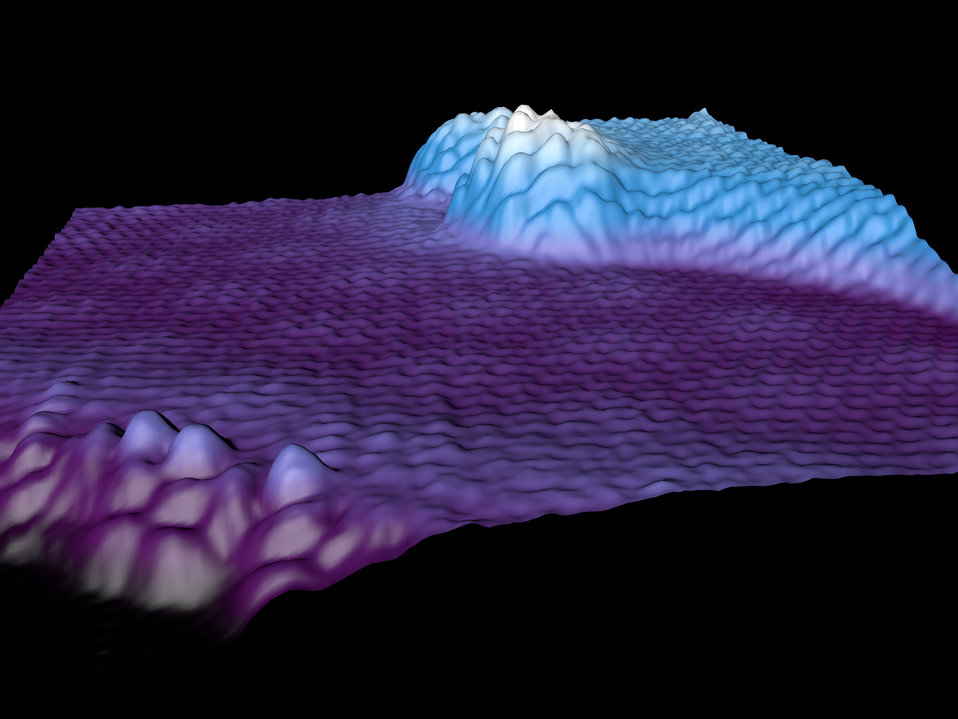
AT ARGONNE NATIONAL LABORATORY, 3D RENDERING OF GRAPHENE SHOWING CONTINUOUS GROWTH ON A PLATFORM.

Lighter colors correspond to slightly higher relative positions. Waves depict the bonds between carbon atoms in the honeycomb lattice. Graphene is made up of hexagonally packed carbon atoms. It is highly transparent thermally conductive, flexible chemically inert, biologically compatible and 200 times stronger than steel.